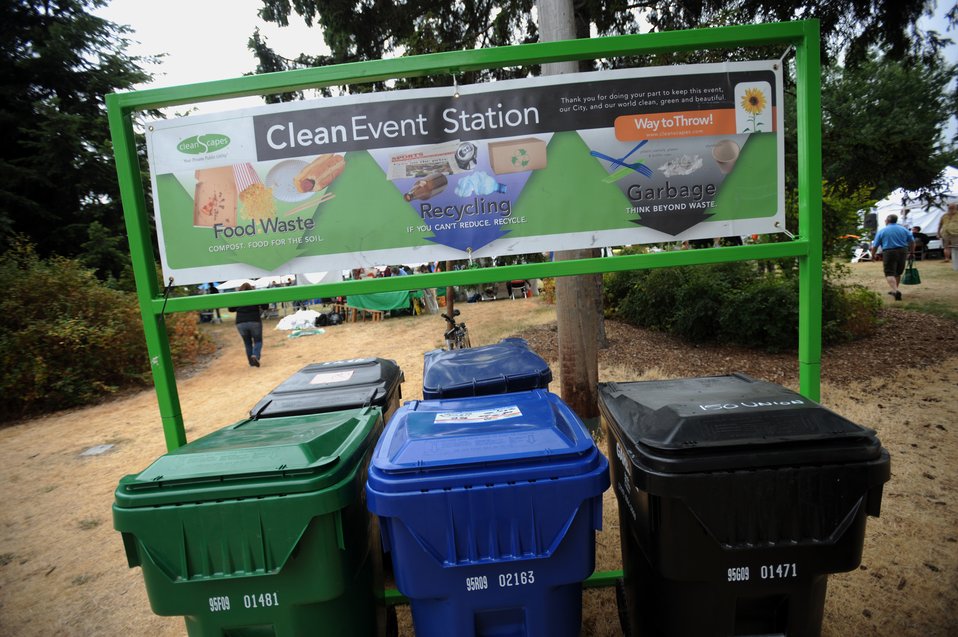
Clean Event Station

A 'Clean Event Station' - including bins for recycling and food waste composting - was set up to accommodate the more than 700 guests at the 5th Annual Duwamish River Festival. The festival is held each year to celebrate ongoing river cleanup and restoration efforts, and help people learn new ways to do their part to protect their local environment. Visit www.epa.gov/region10/duwamish to learn more about EPA's efforts to clean up and restore the lower Duwamish River.